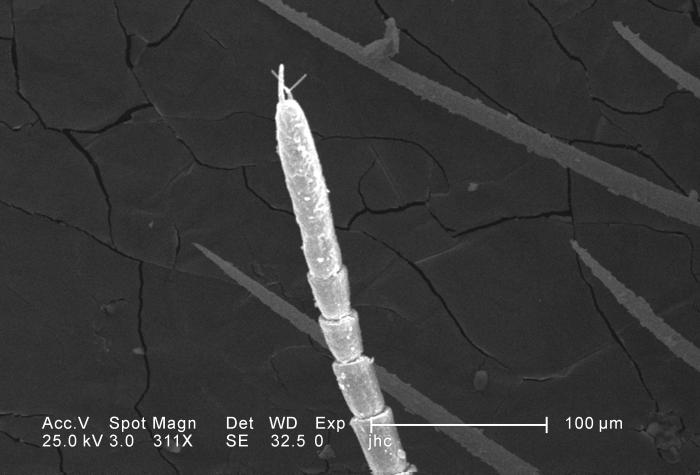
Under a relatively-low magnification of 311X, this scanning electron micrograph (SEM) depicted some of the ultrastructural details displayed at the distal tip of the antennal flagellum emanating from the head region of a larval antlion. This larva is sometimes referred to as a 'doodlebug', because of the trails it leaves in the soft sand as it hunts for prey. This arthropod, i.e., jointed legs, undergoes dramatic morphologic changes when it metamorphoses into a beautiful flying antlion lacewing.